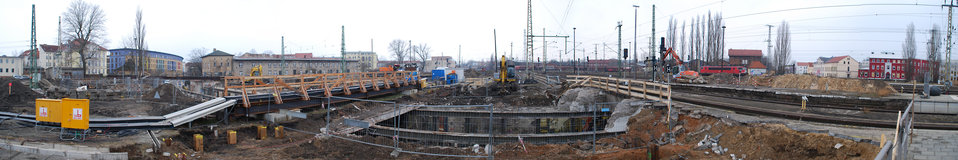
Abriss Bahnhofstunnel Frankfurt (Oder)